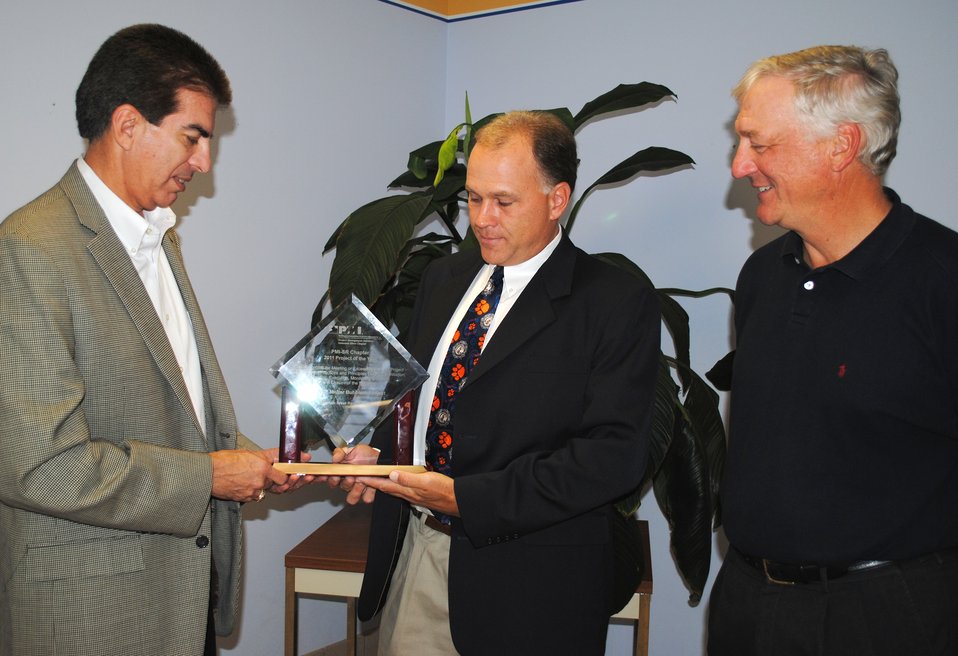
SRR Bubbler Project Earns PMI Project of the Year Honor

Bill Pepper (center), SRR Bubbler Project Manager, accepts the PMI Project of the Year award from Eloy Saldivar (left), PMI President. Looking on is Les Sonnenberg, DWPF Facility Manager.
***
The Savannah River Chapter of the Project Management Institute (PMI) recently recognized the Savannah River Remediation’s (SRR) Defense Waste Processing Facility (DWPF) Melter Bubbler project as its 2011 Project of the Year.
The bubbler technology was installed in DWPF’s melter in September 2010 to increase the annual production of canisters, which are filled with a highly-radioactive waste sludge mixed into a glassified form suitable for permanent storage.